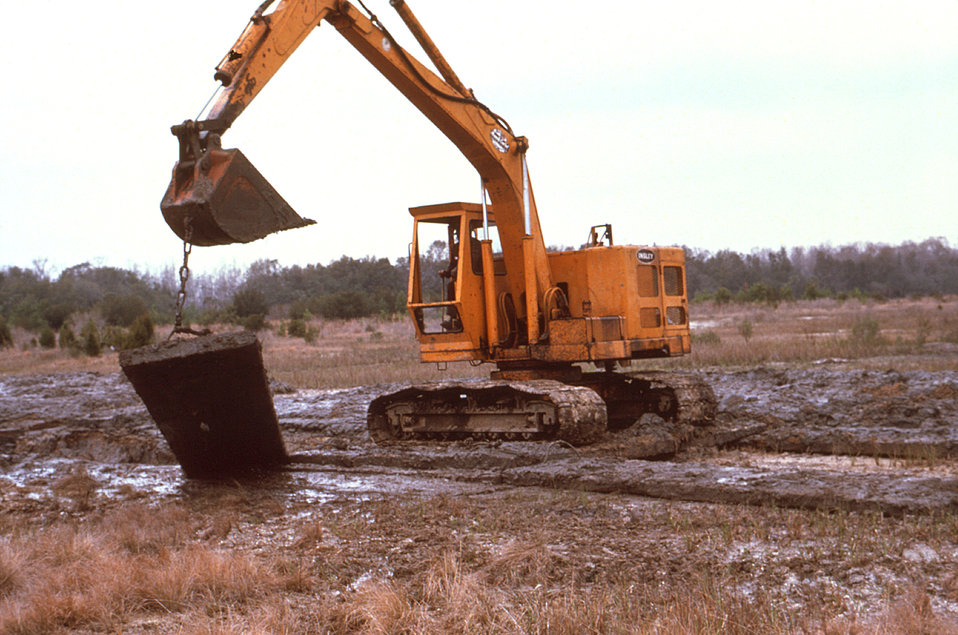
This hydraulically powered bucket shovel was putting a boardwalk in place in order to improve surface traction for the shoveling vehicle while in the process of removing debris from a drainage system, in order to allow for the free flow of water that was collecting in the region.